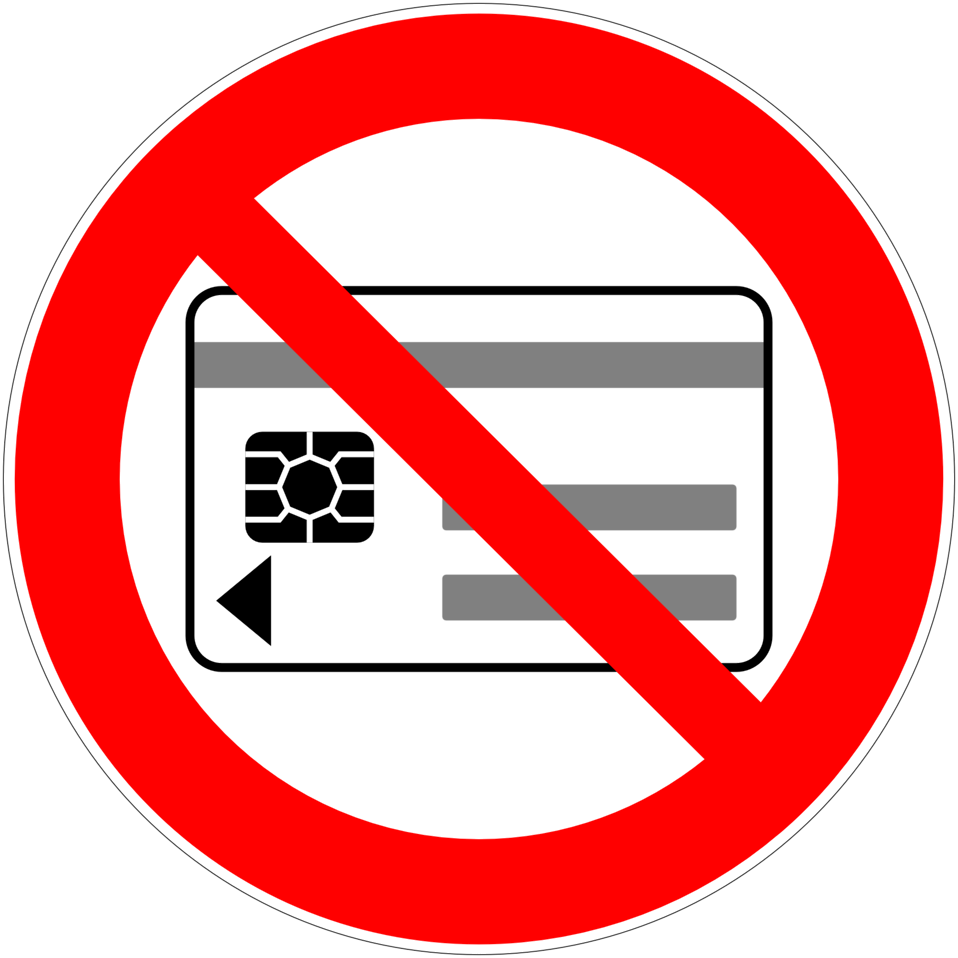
Deutsch: Mitführen von magnetischen oder elektronischen Datenträgern verboten, Verbotszeichen D-P021 nach DIN 4844-2 Do not carry magnetic or electronic media, prohibition sign D-P021 according to German standard DIN 4844-2